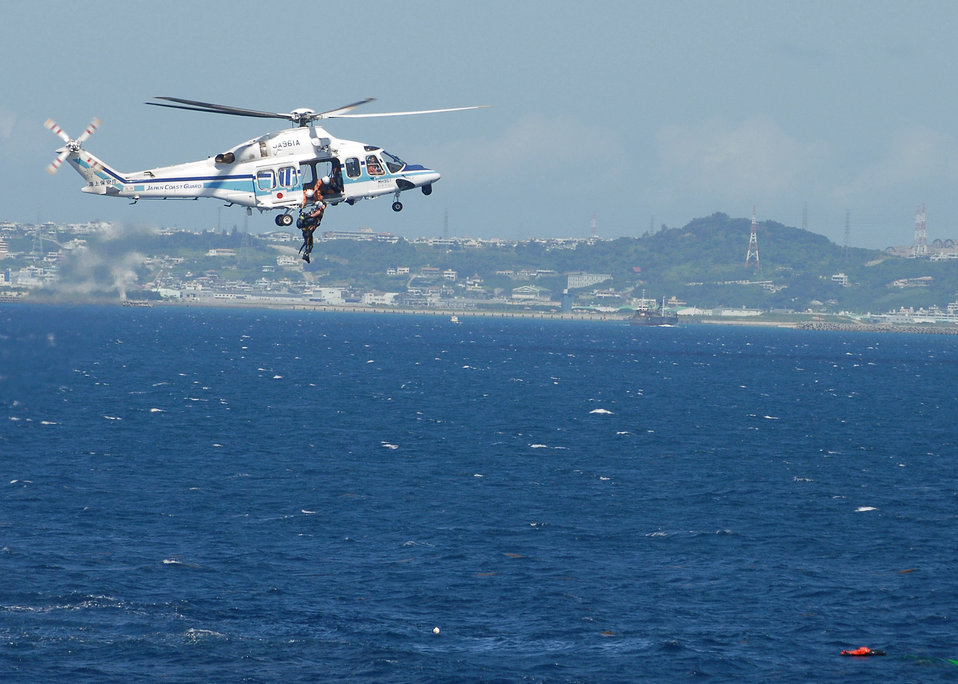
To the rescue

Japanese coast guard members rescue a downed pilot from a simulated F-15 Eagle crash during a crisis management exercise Oct. 8 off the coast of Okinawa, Japan. Members of the 18th Wing from Kadena Air Base, Japan, and the Japanese coast guard rehearsed response procedures for an over the water accident.